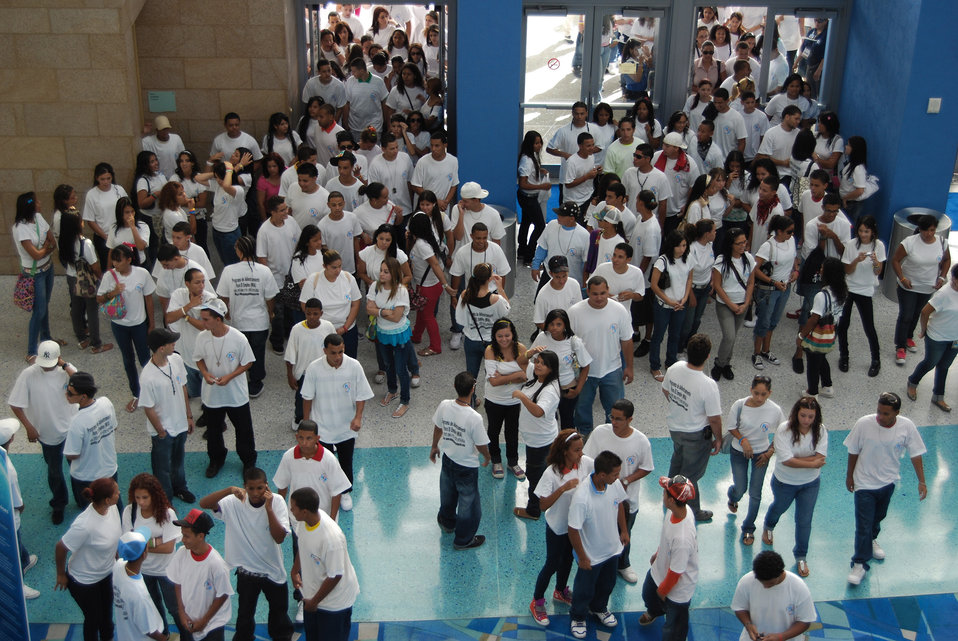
Human Resources Develop Council reaches out to community at LULAC

More than 1,000 local high school and college students converge on the San Juan Convention Center during the League of United Latin American Citizens convention and exposition here July 17. Air Force reservists, other military members and civilians spoke with students to educate them about opportunities in the armed forces and federal service. The students received formalized presentations before attending a job fair and exposition. LULAC is the oldest Hispanic civil rights organization in the U.S.